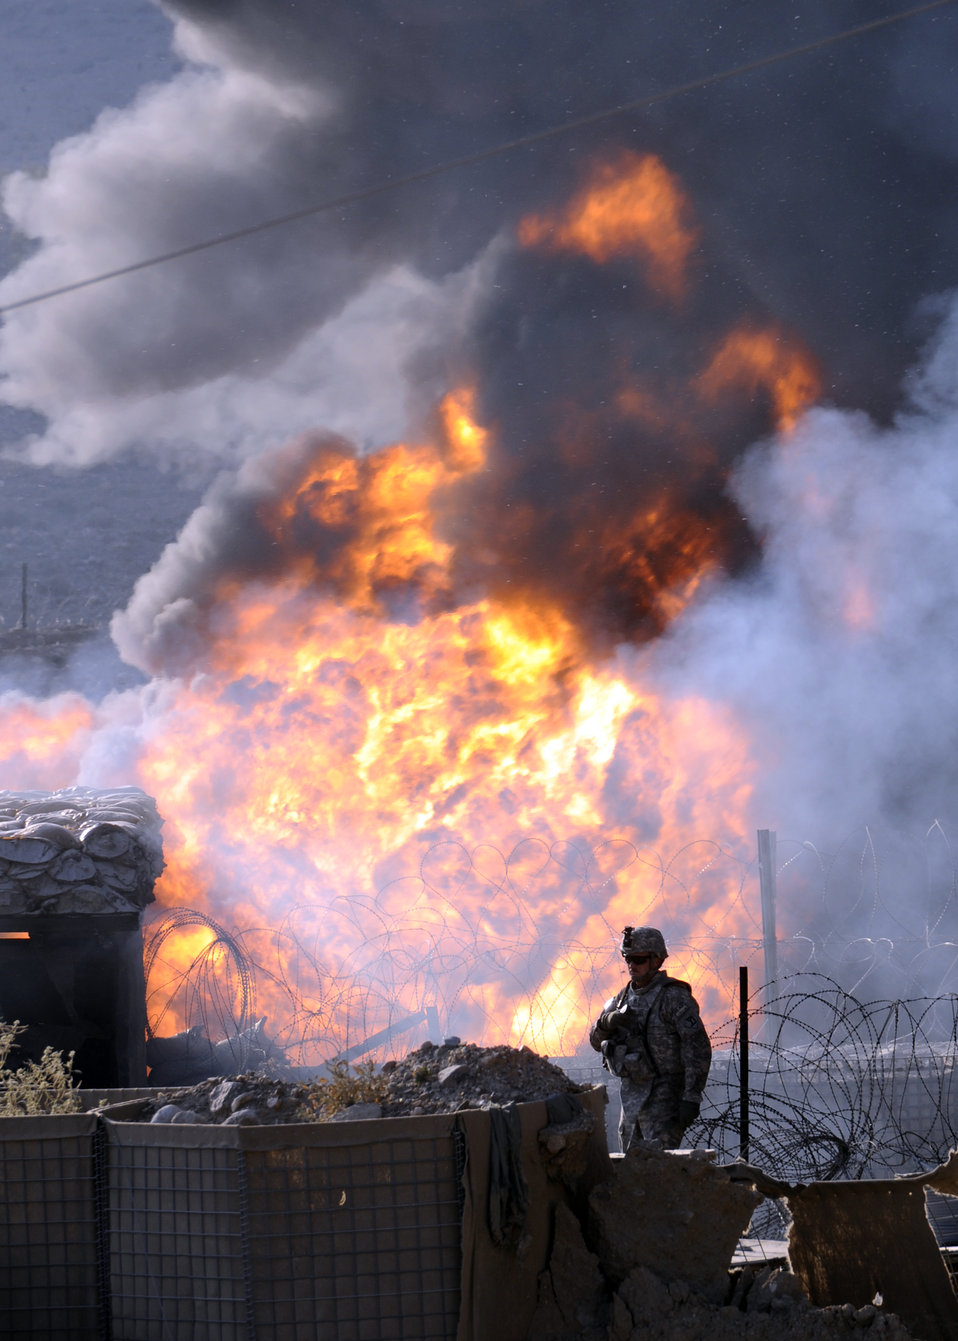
Senior Airman Chanise Epps

Air Force photographer Chanise Epps documenting attack